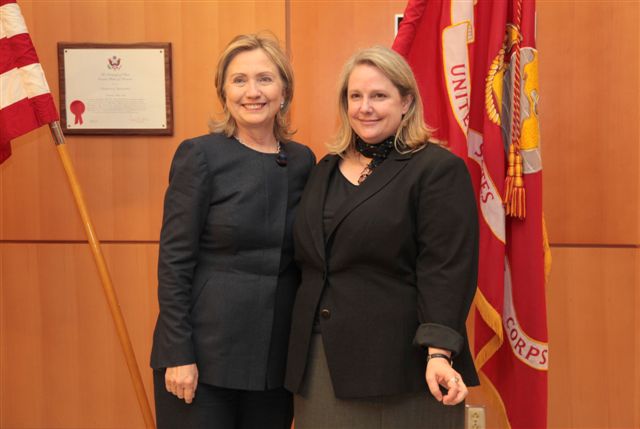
Secretary Clinton Meets With an OSCE Leader

U.S. Secretary of State Hillary Rodham Clinton poses for a photo with an OSCE leader at the OSCE Summit in Astana, Kazakhstan, on December 1, 2010.